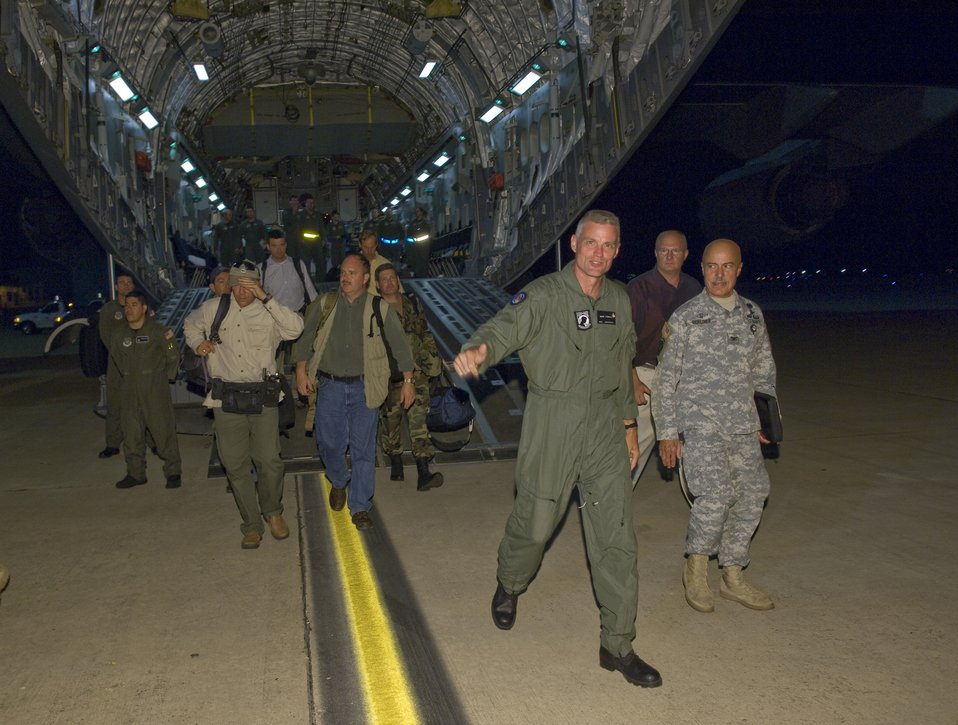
Hostages Arrive in U.S.

Keith Stansell, a contractor who was rescued after being held hostage by rebels in Colombia, steps off the ramp of a C-17 Globemaster III onto U.S. soil at Lackland Air Force Base, Texas at 11:31 p.m., July 2. The aircraft is stationed at Travis AFB, Calif., and the crews came from various bases such as Charleston AFB, S.C., and Pope AFB, N.C.